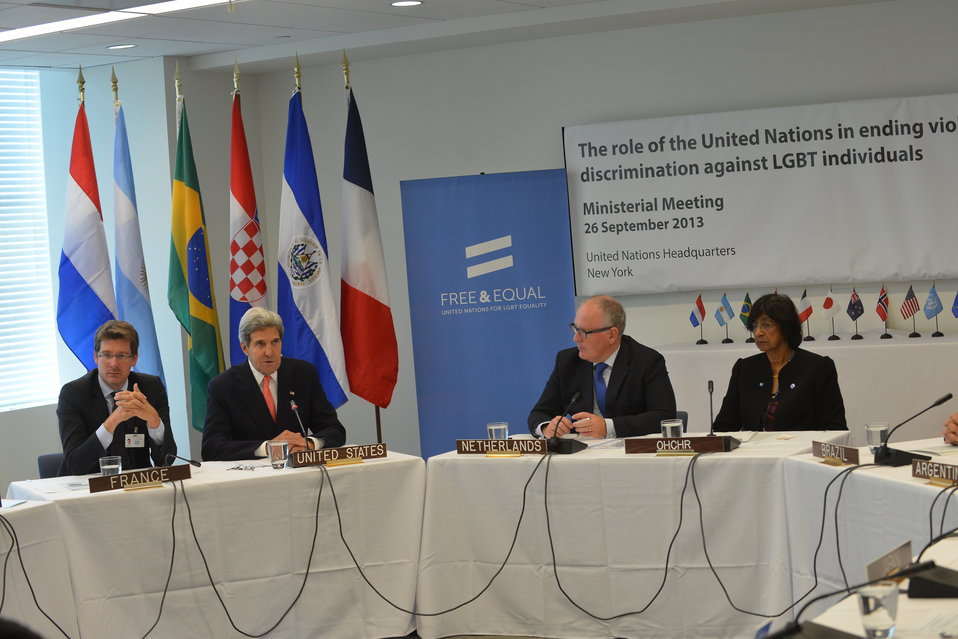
Secretary Kerry Participates in an LGBT Ministerial Event

U.S. Secretary of State John Kerry participates in an LGBT Ministerial Event in New York City on September 26, 2013. You can read Secretary Kerry's remarks at the event here: go.usa.gov/Df6A, and you can read a declaration issued by members of the LGBT Core Group at the United Nations following their meeting here: go.usa.gov/DfFY.